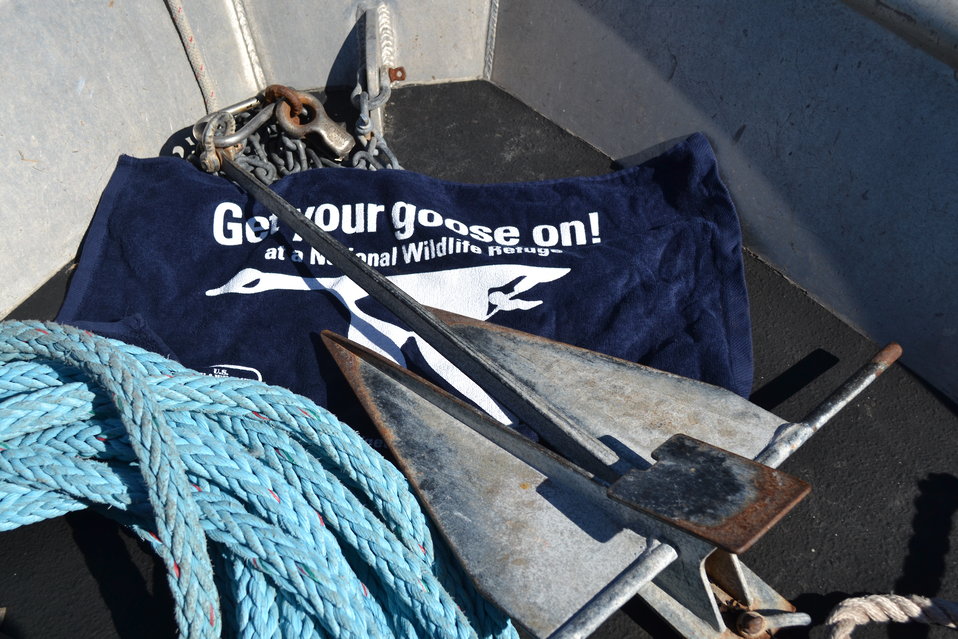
Get Your Goose On! - Alaska Style

Kodiak Refuge Research Vessel Ursa Major

Credit: Katharine Studholme / USFWS

The Kodiak National Wildlife Refuge is a United States National Wildlife Refuge in the Kodiak Archipelago in southwestern Alaska, United States.

The Kodiak National Wildlife Refuge includes the southwestern two-thirds of Kodiak Island, Uganik Island, the Red Peaks area of Afognak Island and all of Ban Island in the archipelago. It encompasses 1,990,418 acres (8,054.94 km2).[2] The refuge is administered from offices in Kodiak.

The refuge contains seven major rivers and about 100 streams. It is a spawning ground for all six species of Pacific Ocean salmon, trout and several other fish species, as well as a nesting ground for 250 species of bird, many of which feed on salmon. The refuge has only six native species of mammals: Kodiak brown bear, red fox, river otter, ermine, little brown bat and tundra vole. The non-native mammals Sitka deer, mountain goat, Roosevelt elk, snowshoe hare and beaver were introduced to the archipelago between the 1920s and 1950s and are now hunted and trapped.

The climate of the refuge is that of southern Alaska, mild and rainy. Many areas in the refuge are densely forested with Sitka Spruce at lower elevations. There are grasslands in drier areas and at higher elevations. The refuge contains several small glaciers.